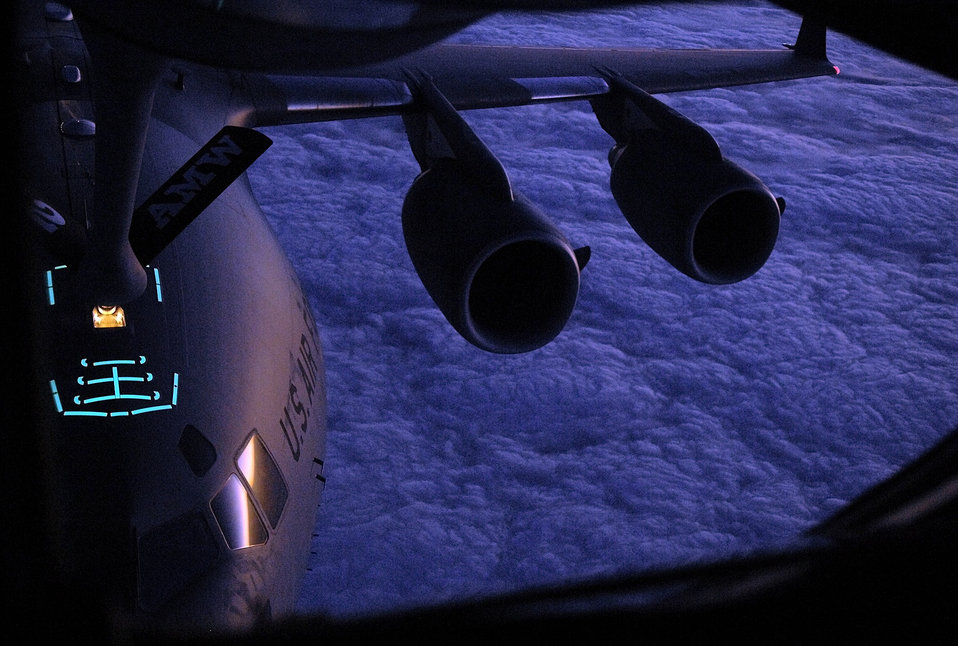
Photographer captures mission

A C-17A Globemaster III aircraft receives fuel from a KC-135R Stratotanker over the Pacific Ocean July 30. The aircraft are from the 452nd Air Mobility Wing out of March Air Reserve Base, Calif.